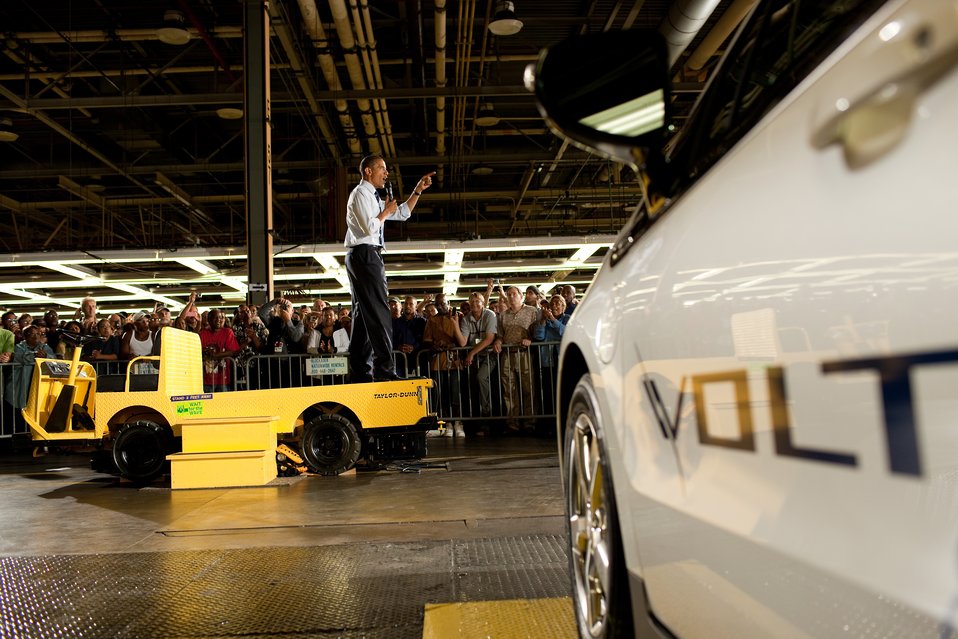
President Obama delivers remarks at General Motors Auto Plant in Hamtramck, Michigan on July 30,2010. Chevy Volt is in the foreground of the picture.